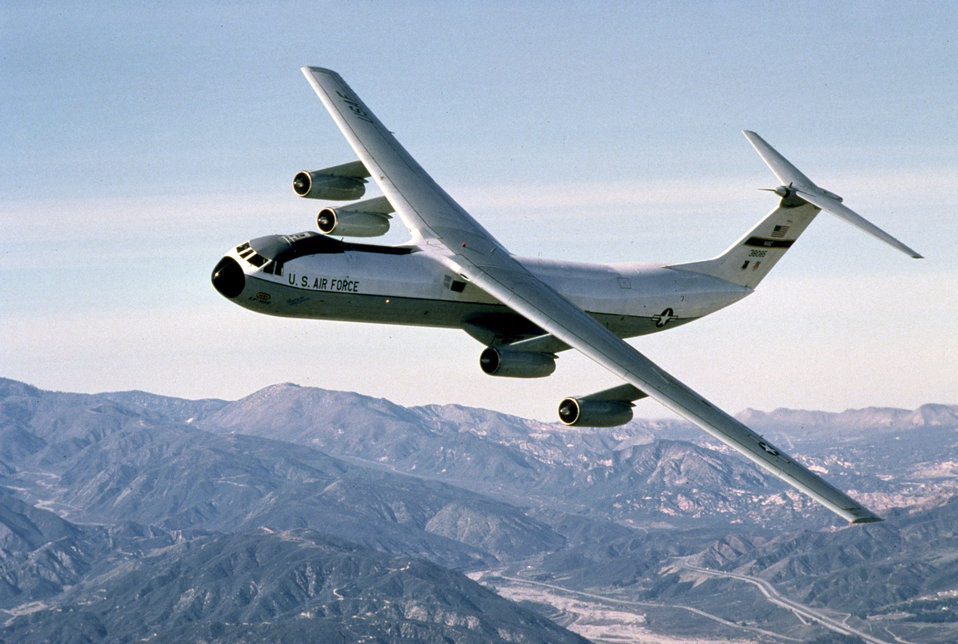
C-141 Starlifter, October 1964.